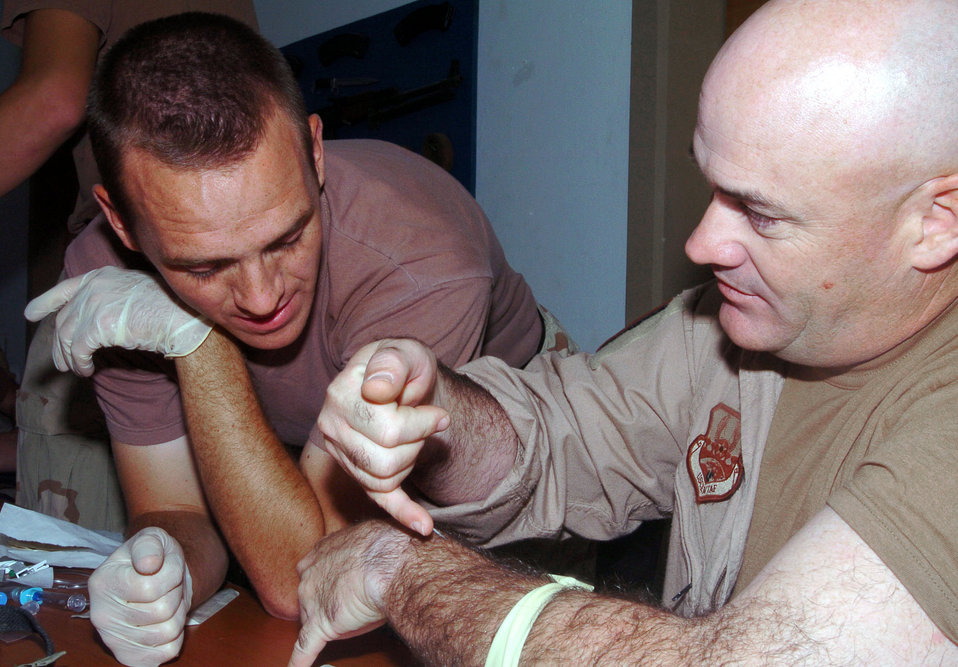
Balad first sergeants bare veins for IV training

BALAD AIR BASE, Iraq -- Master Sgt. Michael Strickland (right) shows Airman 1st Class Jacob Green the best way to insert an intravenous needle. Sergeant Strickland is assigned to the 64th Expeditionary Rescue Squadron here and is deployed from the 347th Medical Group at Moody Air Force Base, Ga. Airman Green is assigned to the 332nd Expeditionary Security Forces Squadron here and is deployed here from the 28th Security Forces Squadron at Ellsworth AFB, S.D.